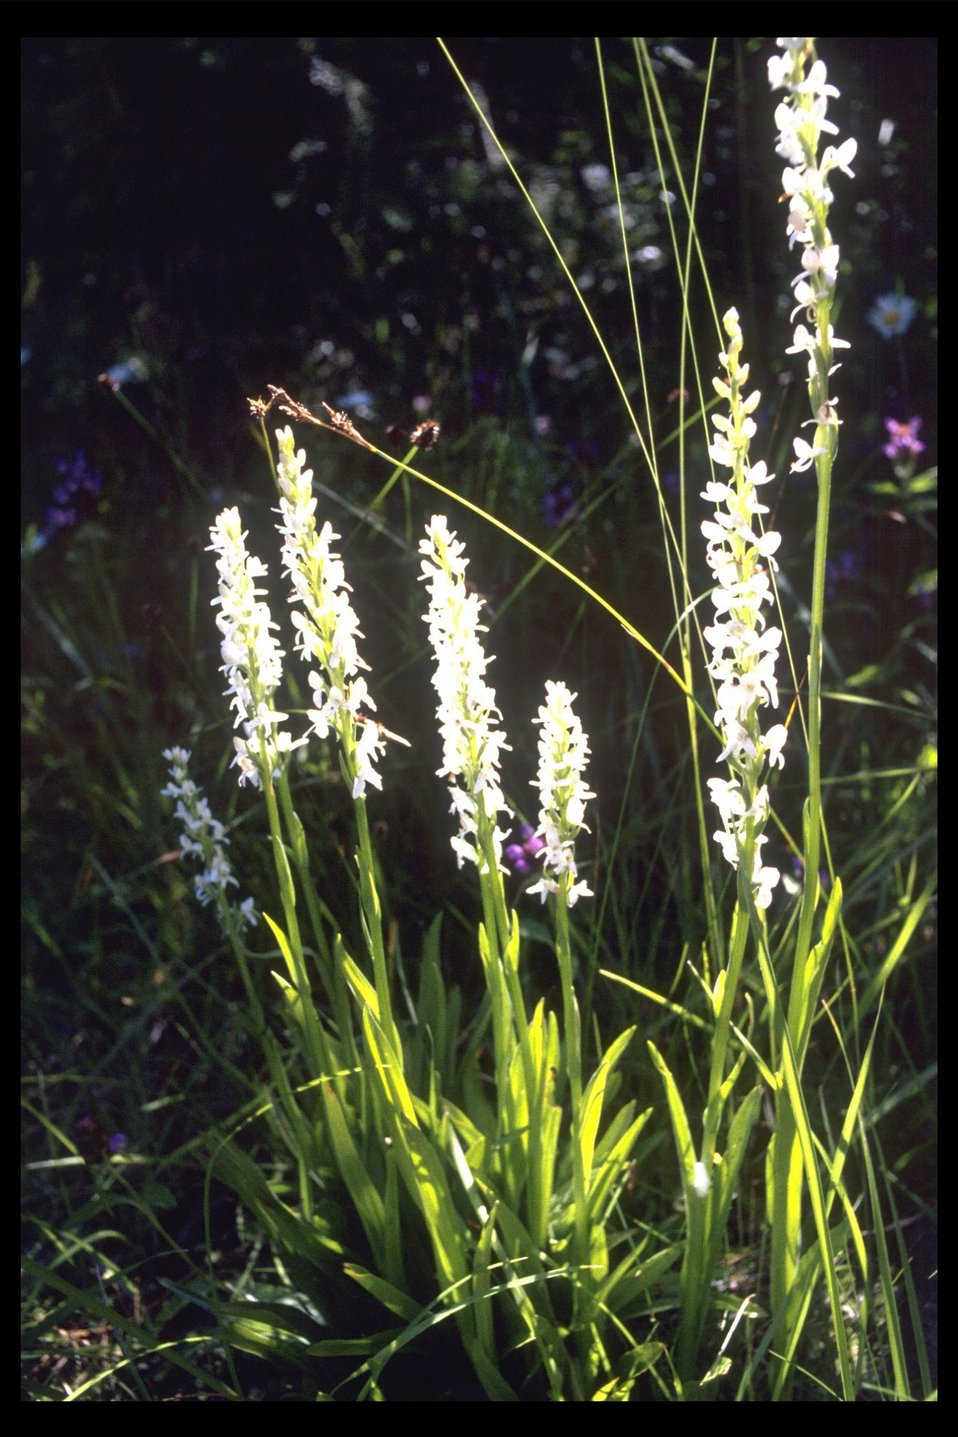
White-flowered Bog Orchid (Platanthera leucostachys) along Morine Creek, a tributary to Elk Creek.